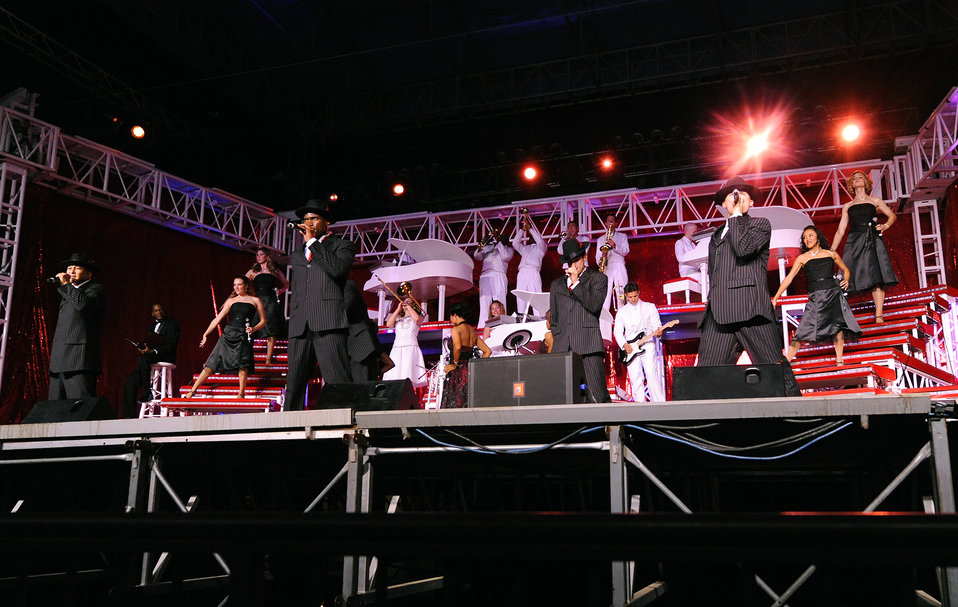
Air Force Week-Sacramento

Tops and Blue Airman perform during the